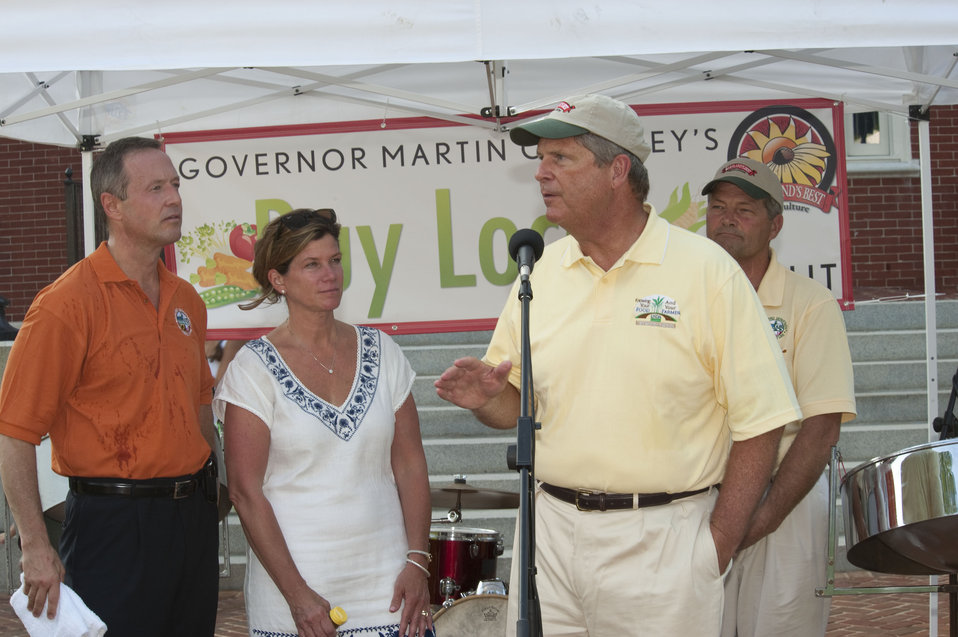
U.S. Department of Agriculture Secretary Tom Vilsack, (3rd from left), Maryland Governor Martin O’Malley (left) and his wife Katie (center) co-host the 4th Annual Maryland Buy Local cookout held in Annapolis MD, on Thursday, July 21, 2011. Maryland’s Agriculture Secretary Buddy Hance” is behind Secretary Vilsack.